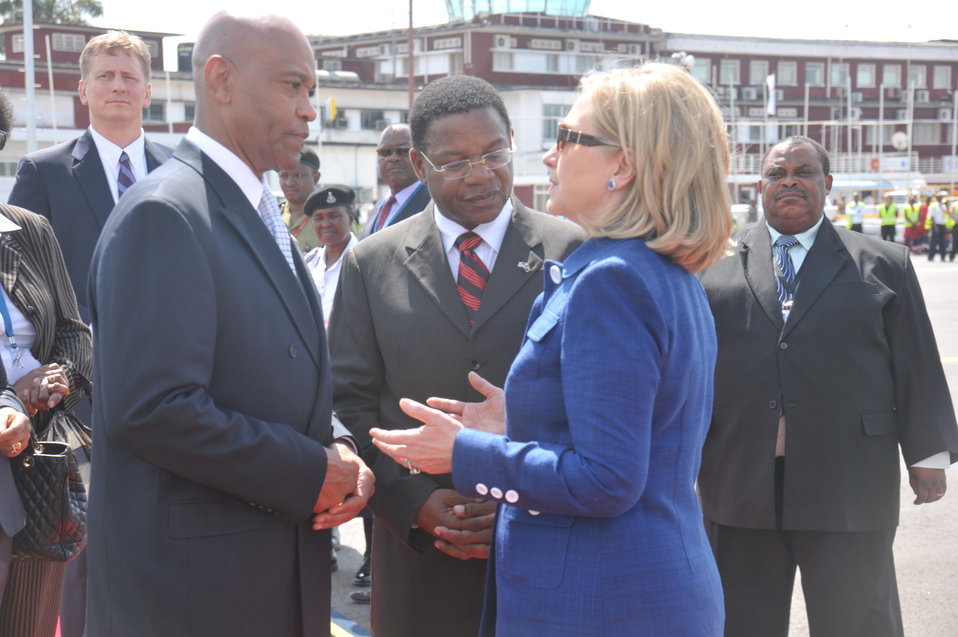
Secretary Clinton Speaks Ambassador Lenhardt and Tanzanian Foreign Affairs Minister Membe

U.S Secretary of State Hillary Rodham Clinton speaks with U.S. Ambassador to Tanzania Alfonso E. Lenhardt, left, and Tanzanian Foreign Affairs and International Cooperation Minister Bernard Membe, center, before departing Dar es Salaam, Tanzania, on June 13, 2011.